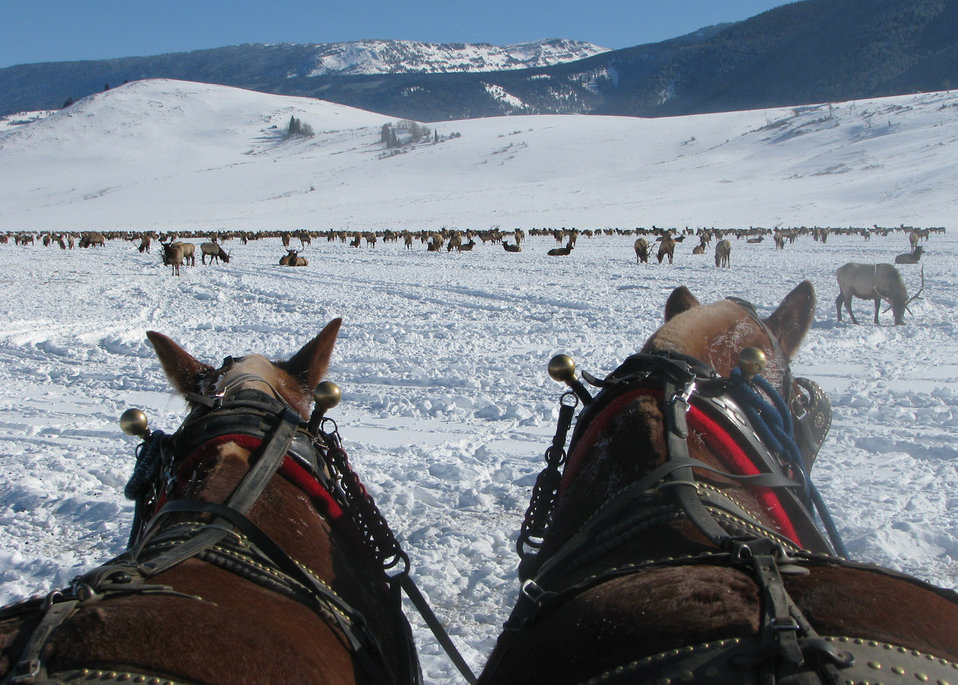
Horse-drawn Ride

The horses lead the way towards a group of wintering elk on a National Elk Refuge sleigh ride.